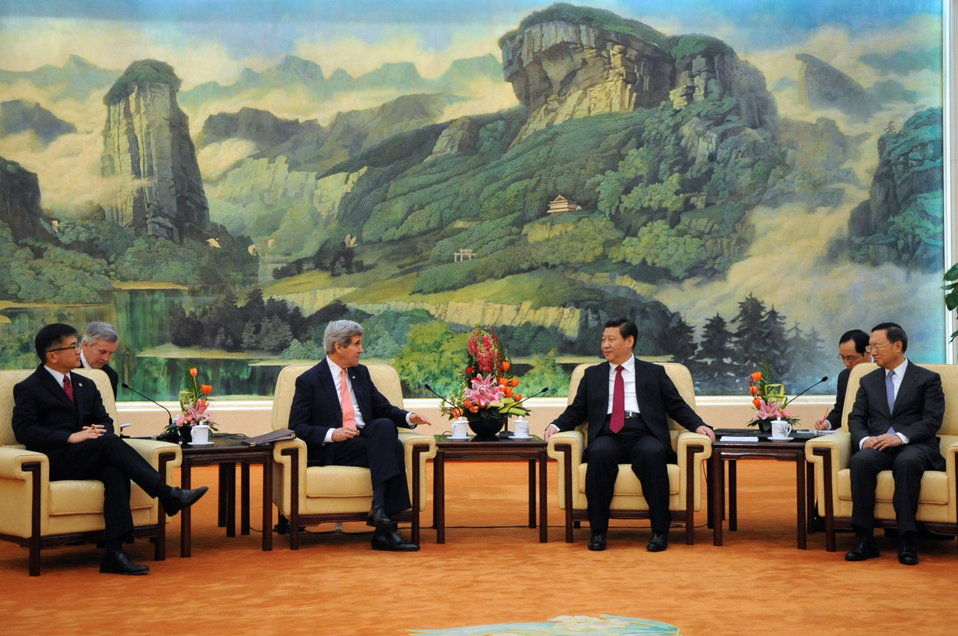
Secretary Kerry Meets With Chinese President Xi

U.S. Secretary of State John Kerry meets with Chinese President Xi Jinping, with U.S. Ambassador to China Gary Locke and Chinese State Councilor Yang Jiechi, at the Great Hall of the People in Beijing, China on February 14, 2014.